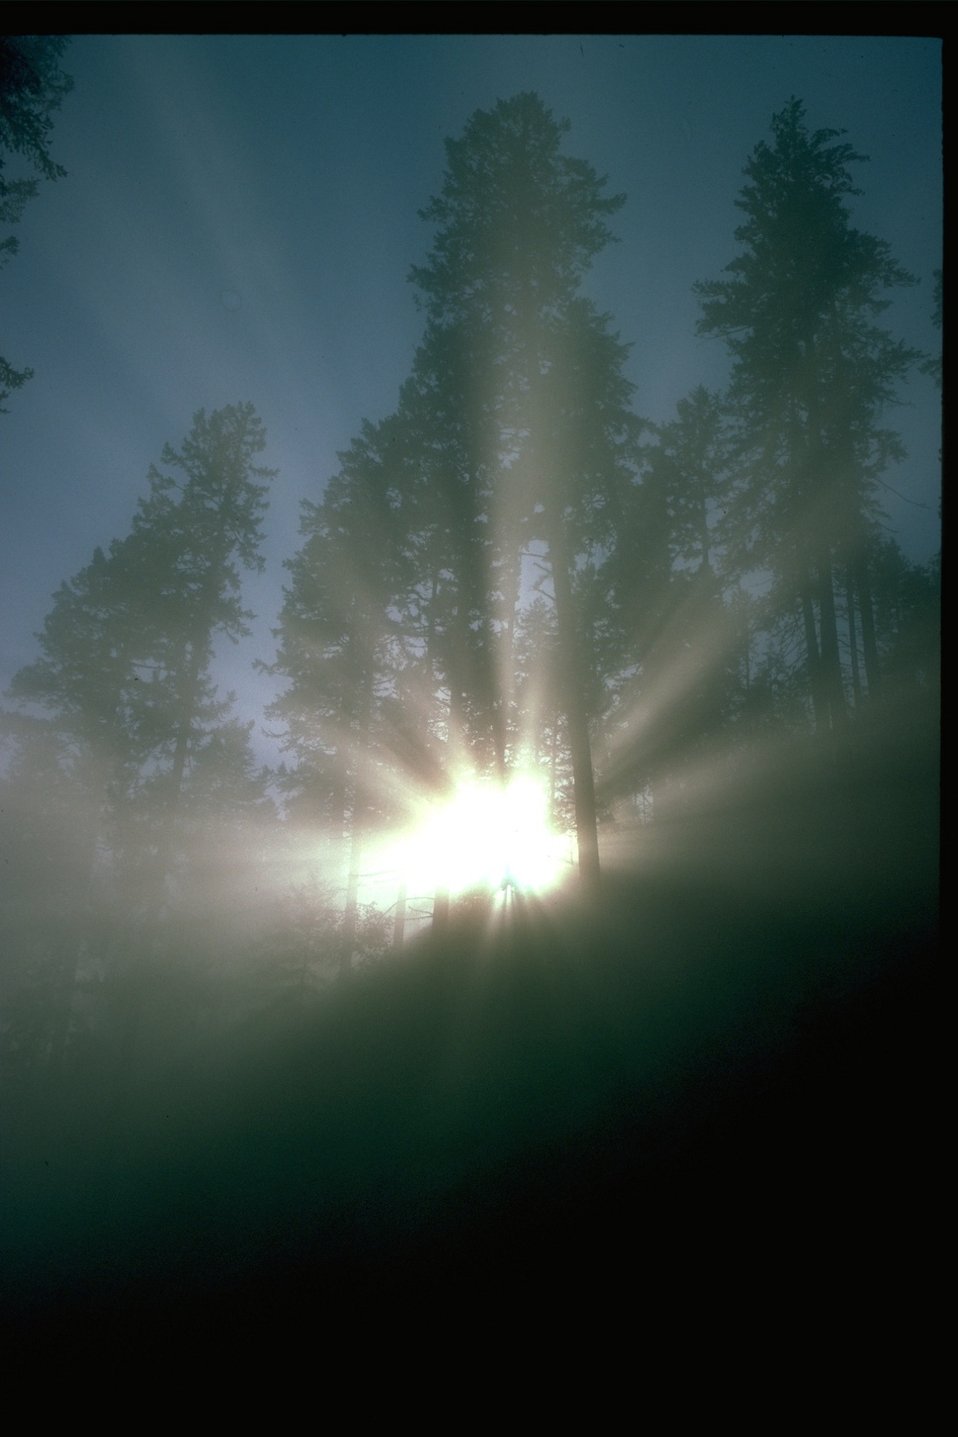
Sun rays through the forest.